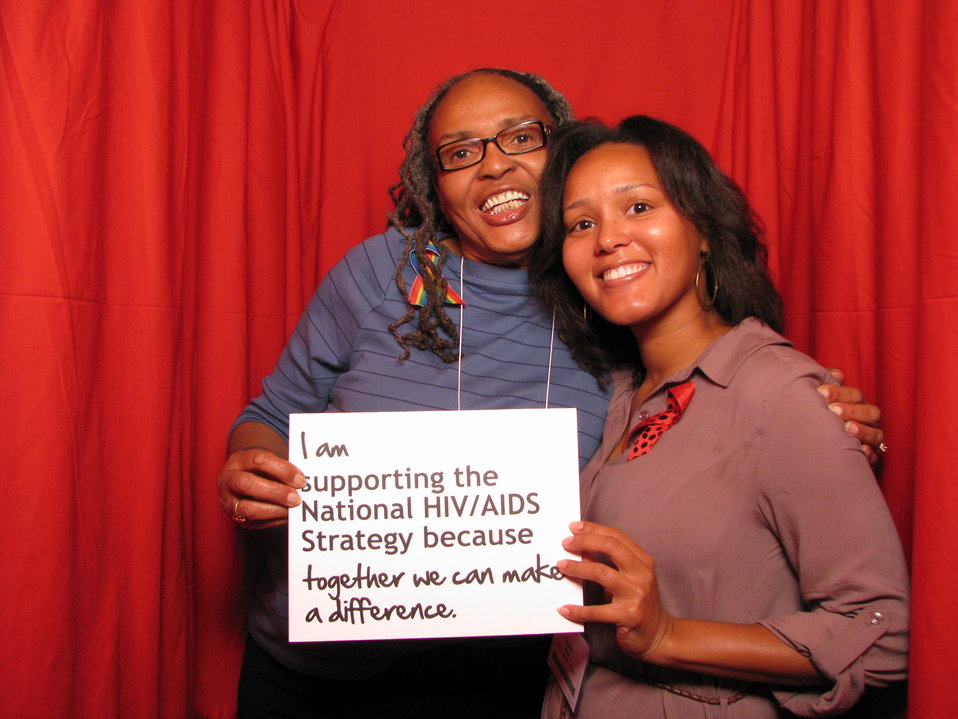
I am supporting the National HIV/AIDS Strategy because together we can make a difference.

From the AIDS.gov photo booth at the U.S. Conference on AIDS, September 2010 (Orlando, FL).